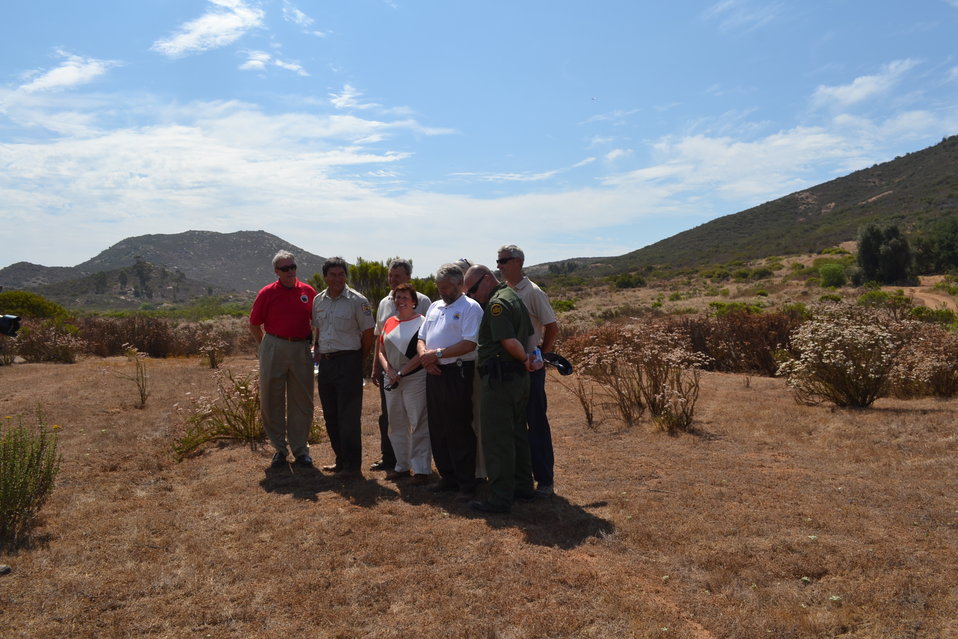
Hidden Valley Ribbon Cutting

(USFWS)